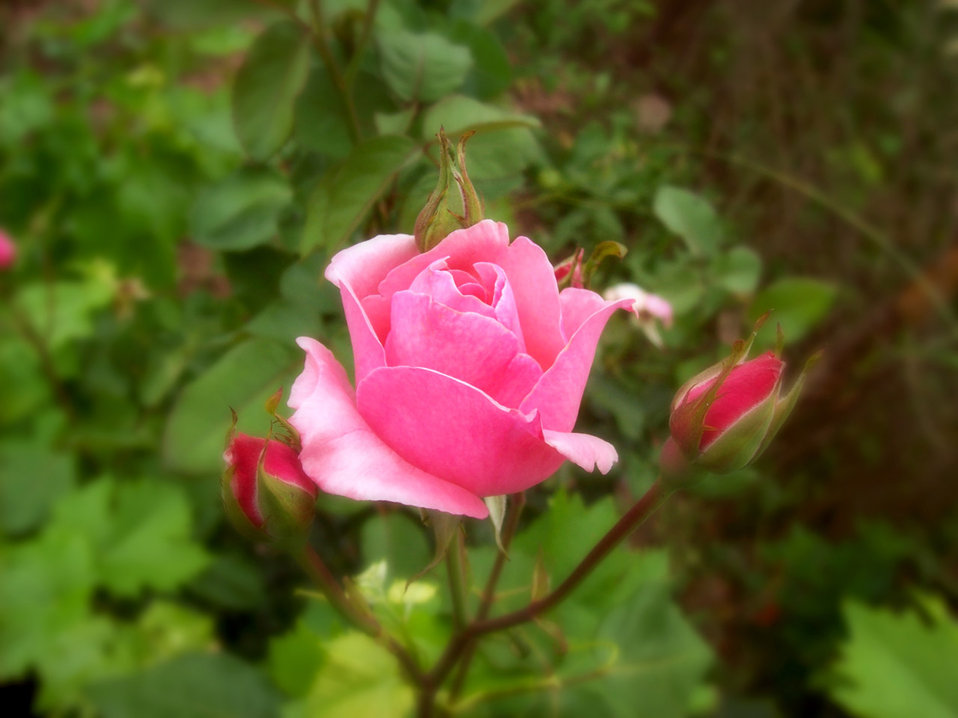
Pink rose in the garden.